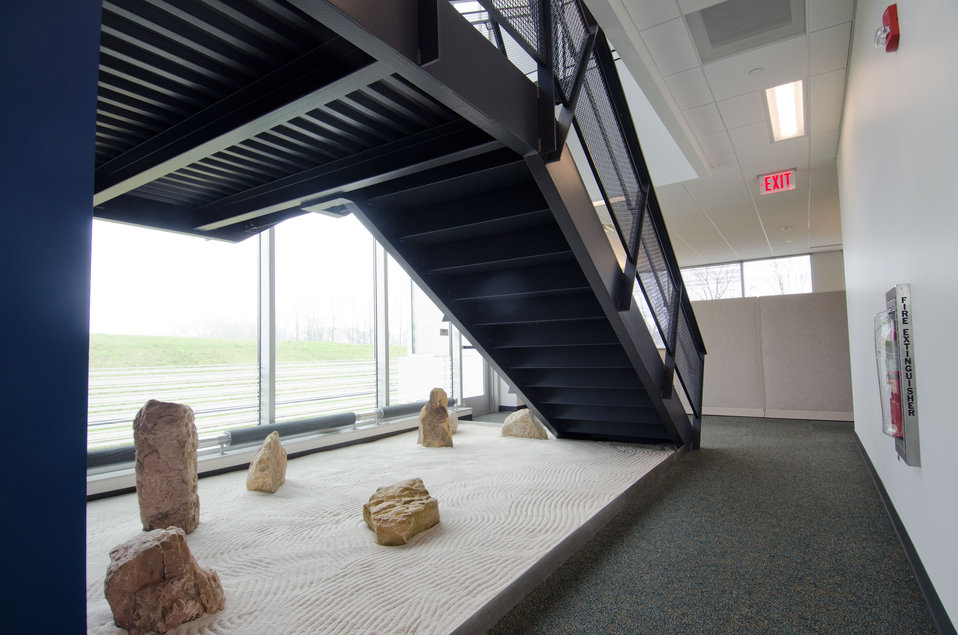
Interior stairway at Unilife, a medical device company focused on the design, development, manufacture and supply of a proprietary range of retractable syringes on Monday, April 20, 2011 in York, PA. In partnership with Sanofi-aventis, Mikron Group, and MDMA, U.S. Department of Agriculture Rural Development was able to guarantee $18,000,000 through its Business and Industry Guaranteed Loan Program to construct a custom-built, global headquarters and commercial production facility in York, Pennsylvania. The 165,000 sq. ft. facility was completed in late 2010 and can accommodate future growth as well as the Company’s projected demand from pharmaceutical and healthcare companies for its proprietary range of Unifill ready-to-fill (prefilled) and Unitract general purpose safety syringes. Stage one of the facility is designed to accommodate the production of up to 400 million Unilife syringes per year and to meet stringent pharmaceutical standards for primary drug containers. Adjacent to the manufacturing facility is Unilife’s global headquarters that support administrative, marketing, new product development, quality laboratories and other operational functions. Unilife, which first arrived in Pennsylvania in 2006. The company has doubled its employees for the past three years. There are approximately 150 employees, and they expect to double the number by 2015.